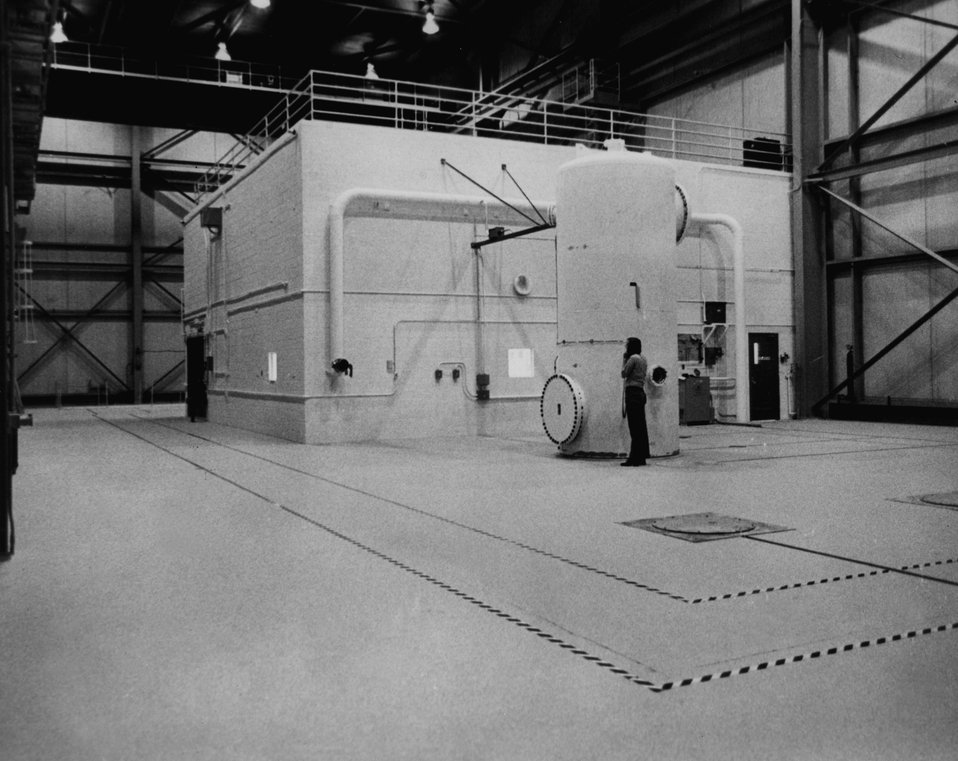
The equipment decontamination facility atop the 'hot cells' at the U.S. Atomic Energy Commission's Argonne National Laboratory